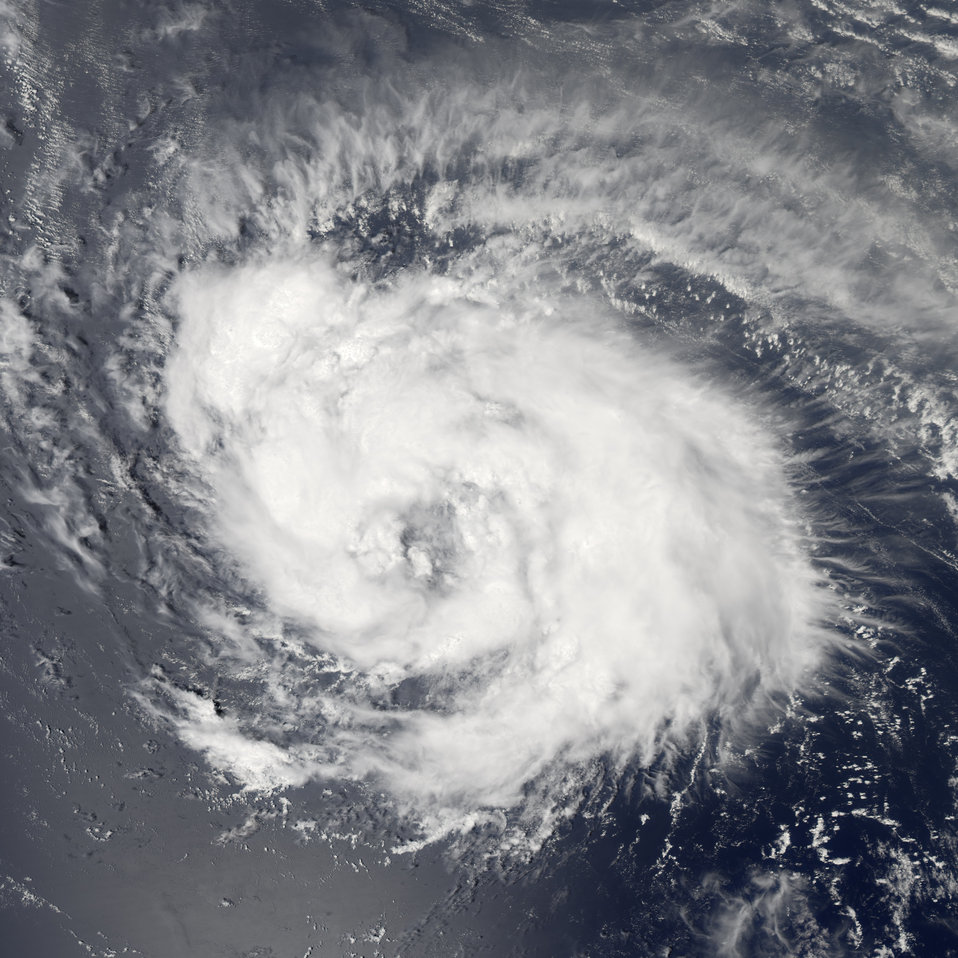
Ike Becomes a Major Hurricane: Category 4